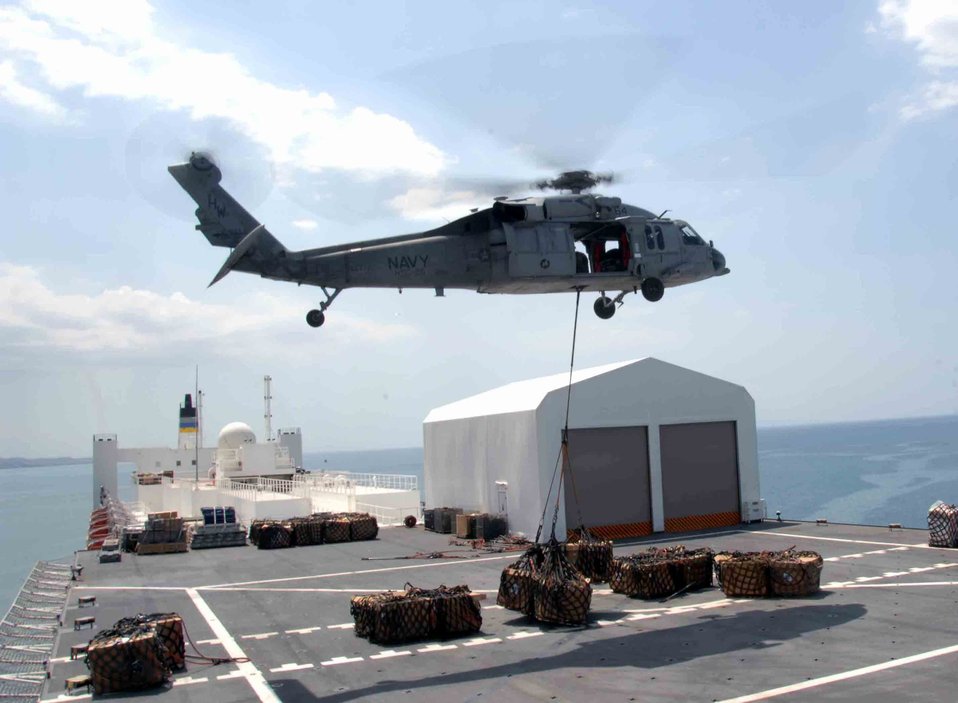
Continuing Promise 2009

An U.S. Navy MH-60S helicopter carries one of the 333 loads of cargo off the hospital ship USNS Comfort, anchored off the shore of Port-Au-Prince, Haiti, April 14. The Comfort is on a four-month humanitarian and civic assistance mission to Latin America and the Caribbean as part of Continuing Promise 2009. The Comfort will visit seven countries including Antigua and Barbuda, Colombia, the Dominican Republic, El Salvador, Haiti, Nicaragua and Panama.